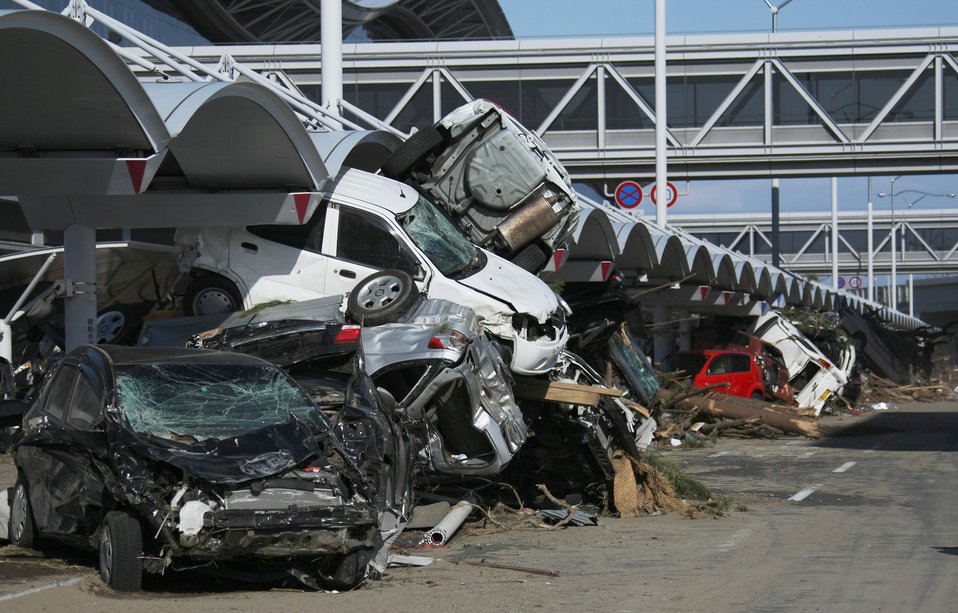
Disaster Relief Support

Disaster Zone at Sendai Airport.